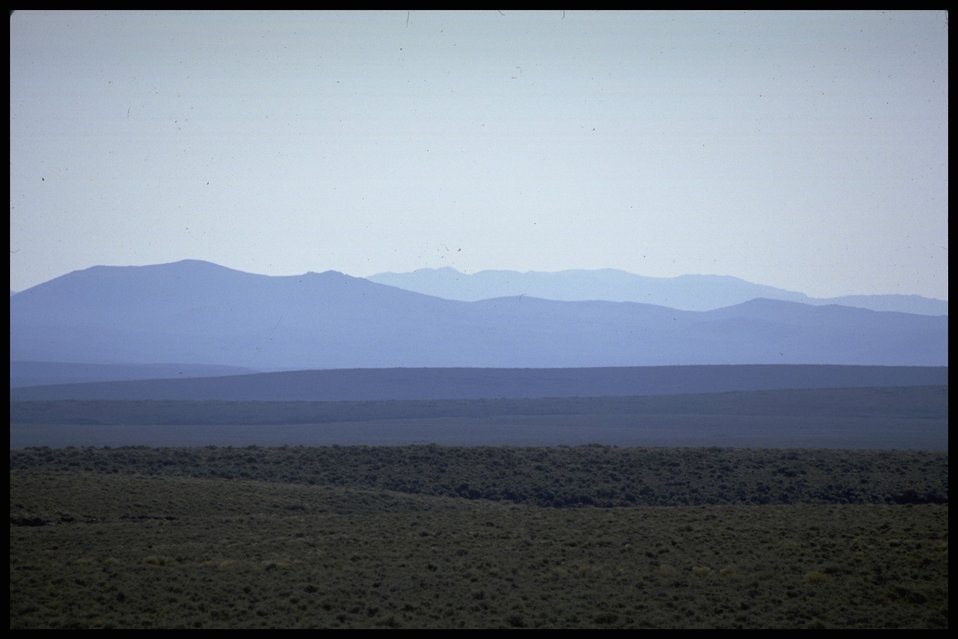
Scenic view, South (or East) of Doharty, Lakeview District.